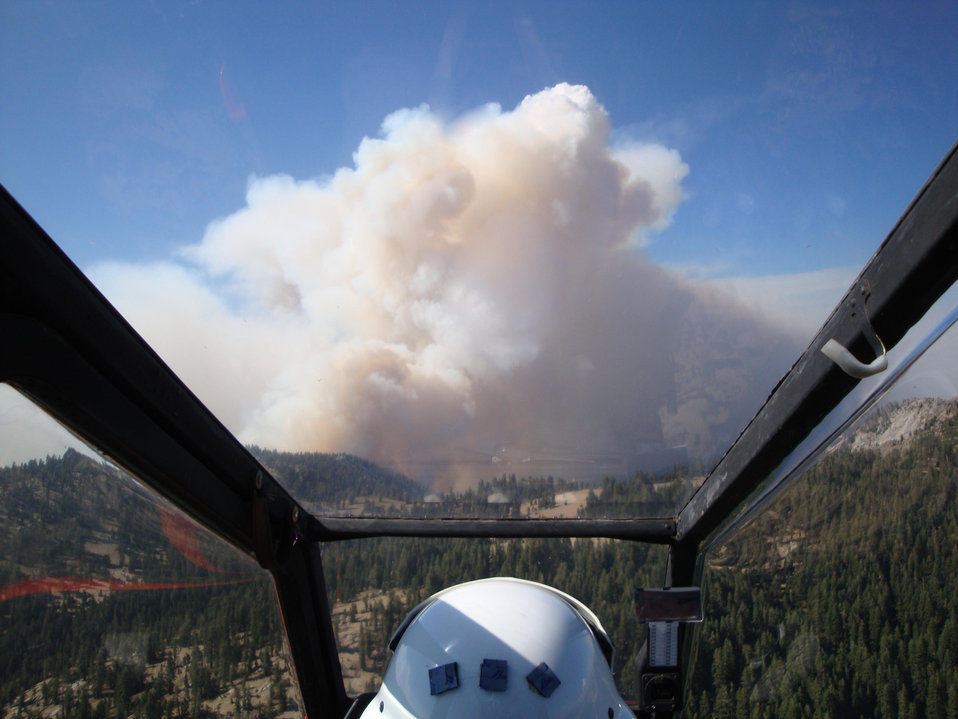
U.S. Forest Service AH-1 Cobra FireWatch helicopter pilot's view of the Aspen Fire. The Aspen Fire in the Sierra National Forest near Big Creek, CA began on Jul. 22, 2013 by lightning and has consumed approximately 16, 204 acres and is approximately 40% contained.